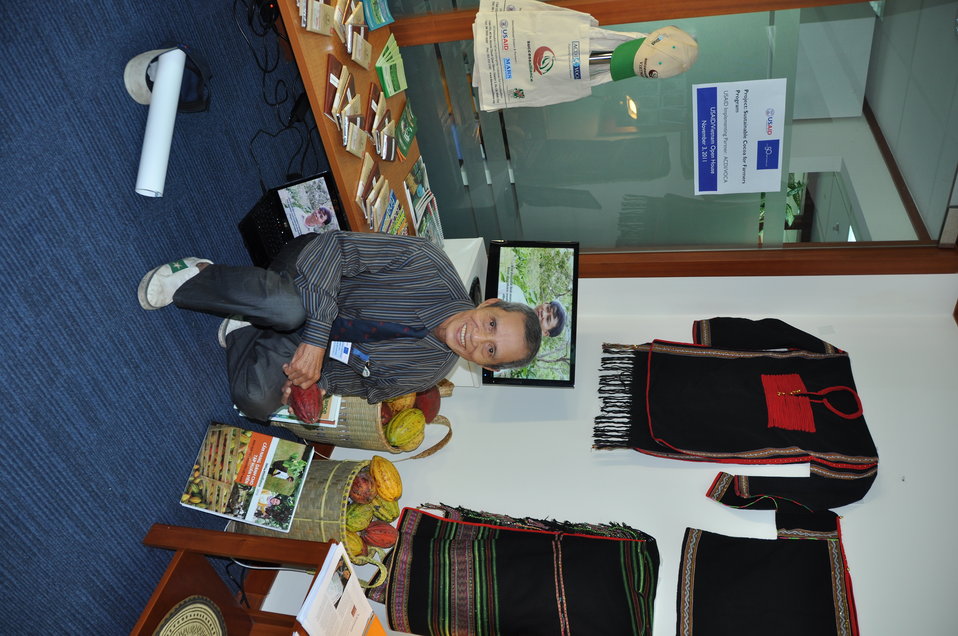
USAID Vietnam Open House 50th Anniversary, Hanoi